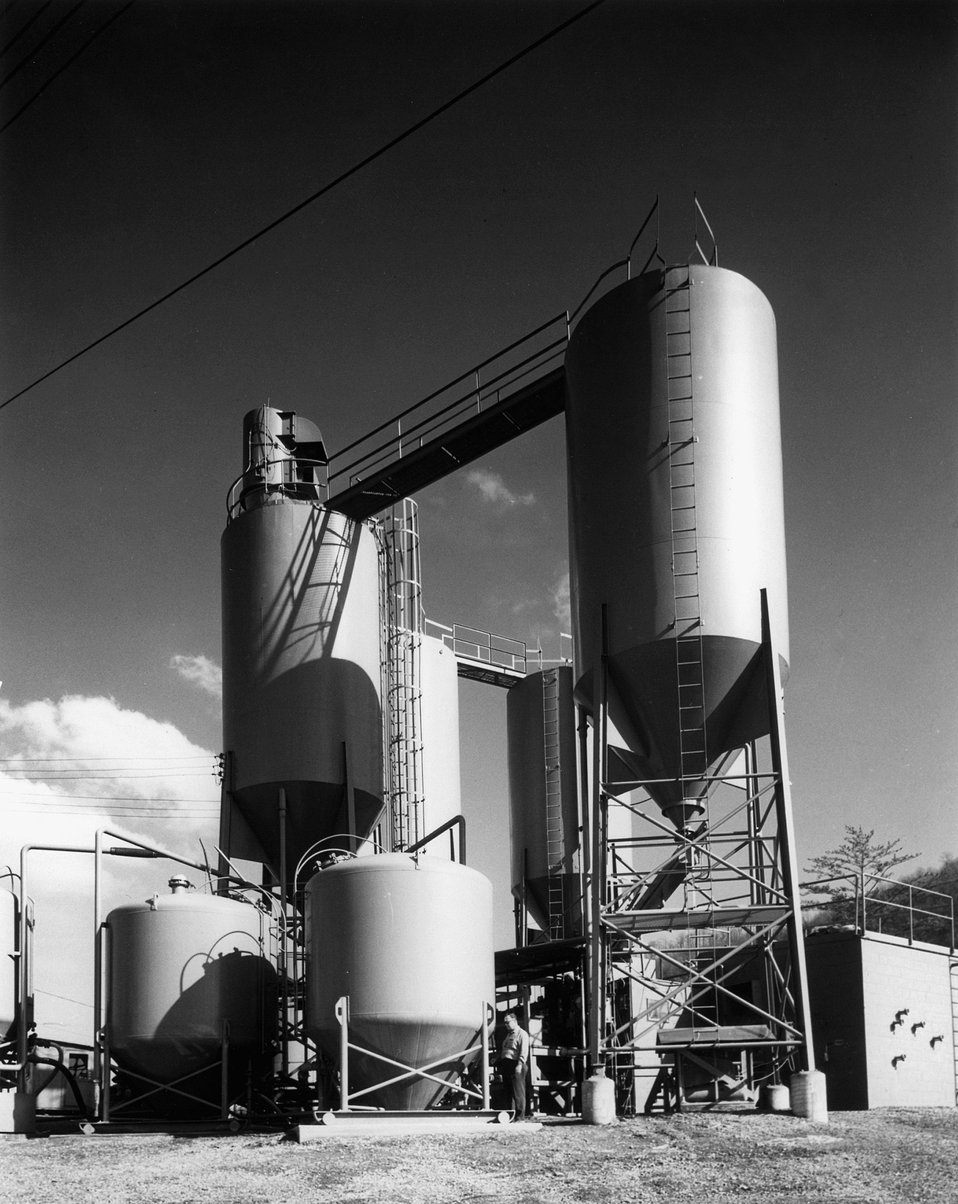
Hydraulic Fracturing Facility at ORNL used for pumping intermediate radioactive waste material 1000 feet beneath surface of ground into shale fracture areas. c. 1970